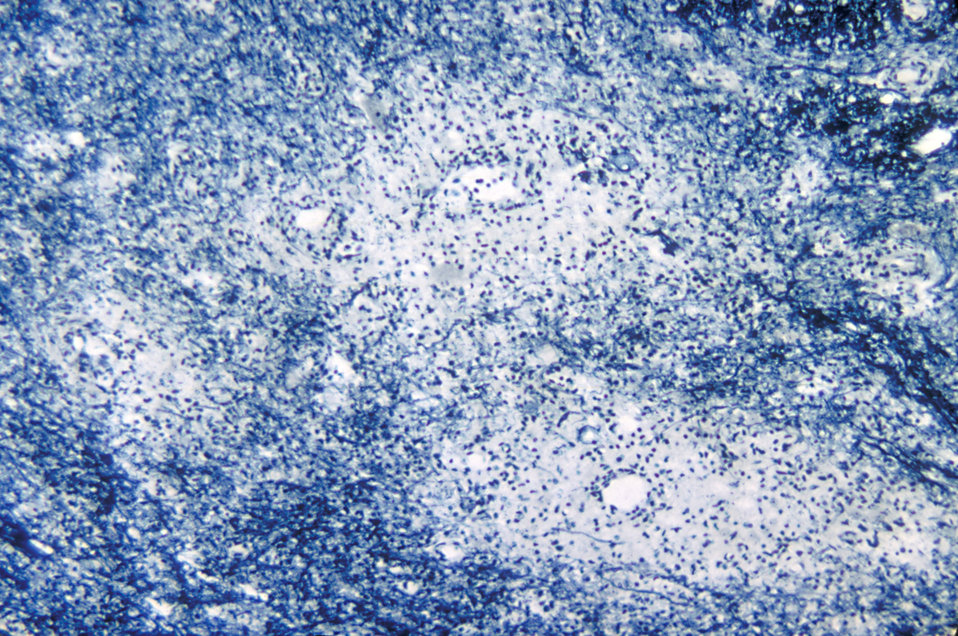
A photomicrograph of the cervical spinal cord in the region of the anterior horn revealing Polio Type III degenerative changes.